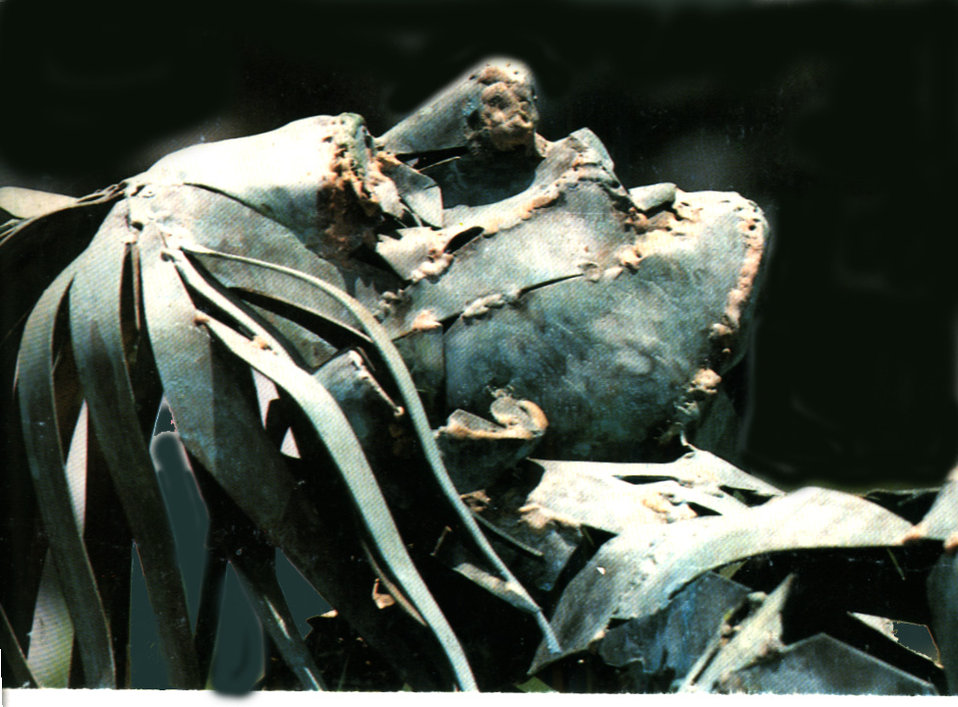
idilio eterno detalle2 1